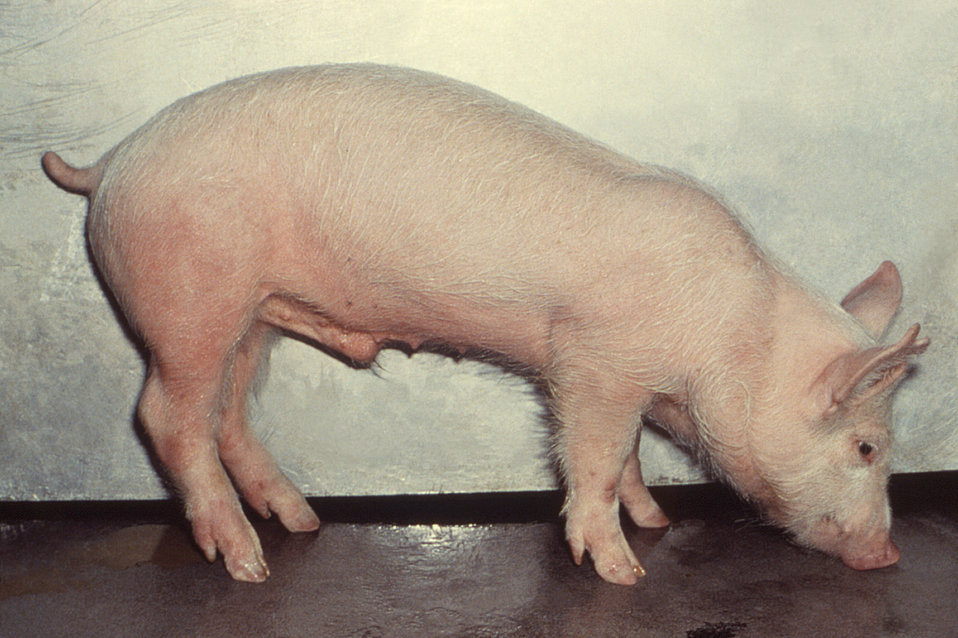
From the 'Illustrated Manual for the Recognition and Diagnosis of Certain Animal Diseases', published in 1982, by the Mexico-United States Commission for the Prevention of Foot and Mouth Disease, this photograph depicts a domesticated pig infected with hog cholera (HC), whose skin shows areas of diffuse erythema.